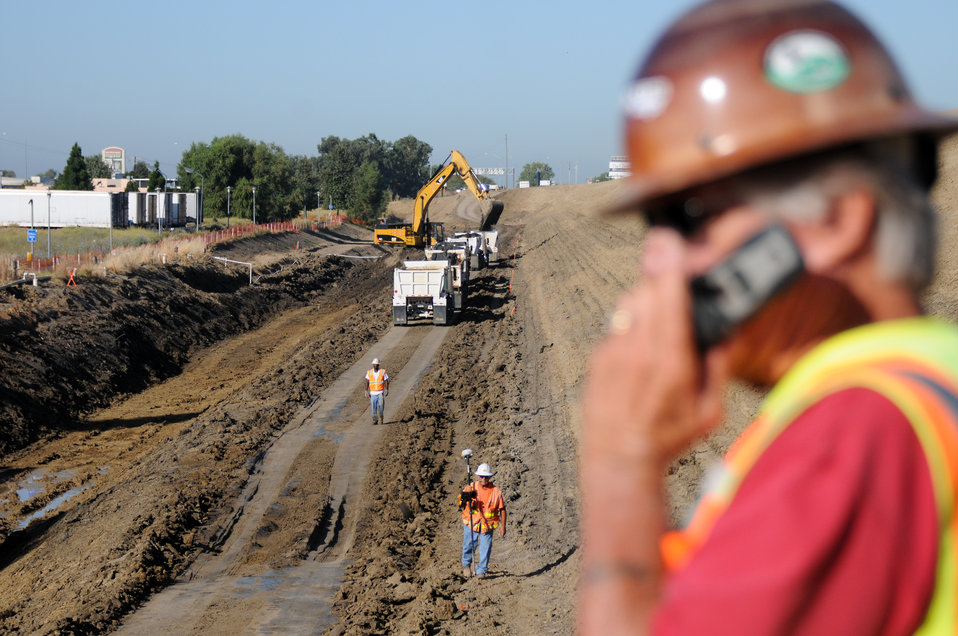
Yolo Bypass levee repair

Construction continues on a levee improvement project along the Yolo Bypass in West Sacramento, Calif., Aug. 18, 2011. Under its West Sacramento Project, the U.S. Army Corps of Engineers Sacramento District is repairing a slump in the levee and installing a drain and pumps to move water seeping into the levee directly into the bypass.